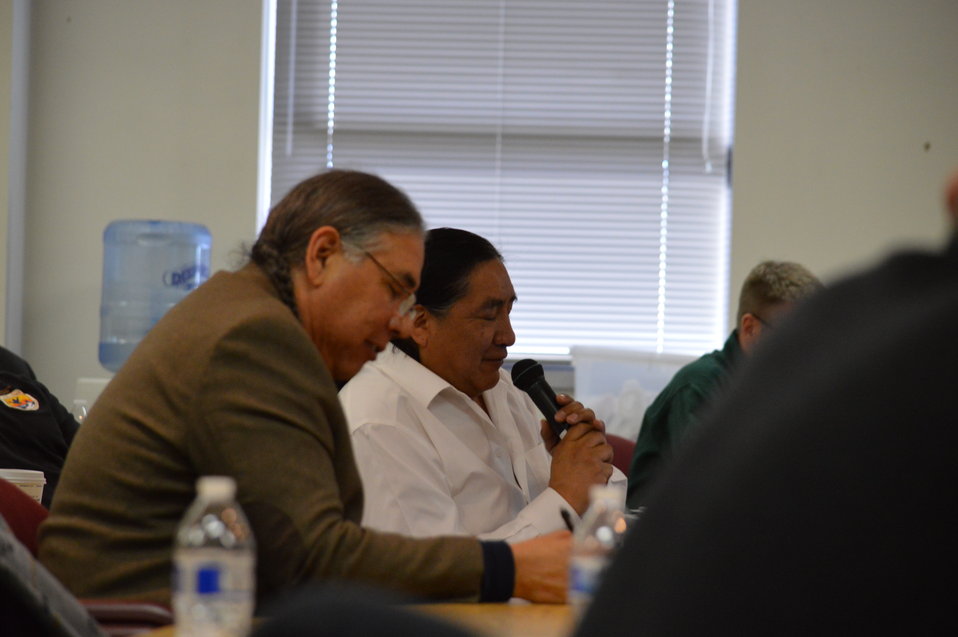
Eagle Summit III

Questions and comments are raised at the Eagle Summit III in Denver, Colorado on March 20, 2014 at the Rocky Mountain Arsenal National Wildlife Refuge.